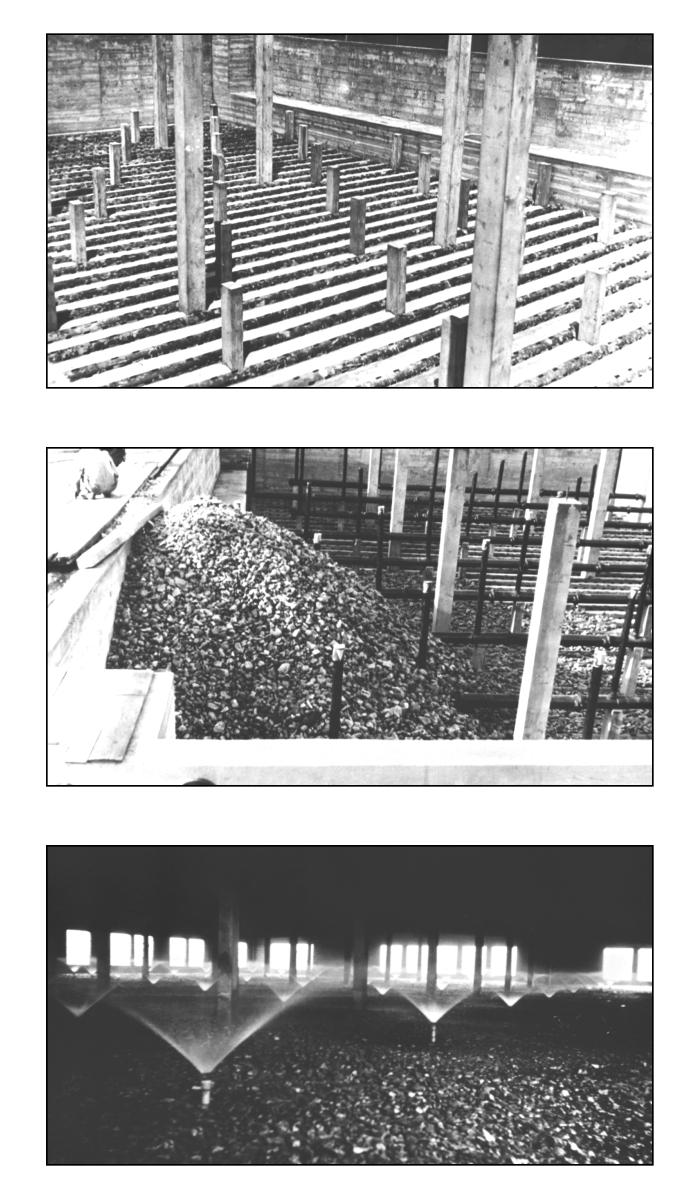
This series of three historic 1934 photographs revealed some of the industrial design associated with an old municipal trickling water purification filtration system that at the time, was under construction in Minnesota. The technology to apply raw sewage, called 'dosing', to gravel or soil filters, was devised in the later nineteenth, and early twentieth centuries. In this series of images the three stages, top to bottom, were required in the building of these filtration beds. At the top, the cement infrastructure is created, then the structure is filled with gravel, and, finally, the liquid to be filtered is sprayed over the gravel beds.